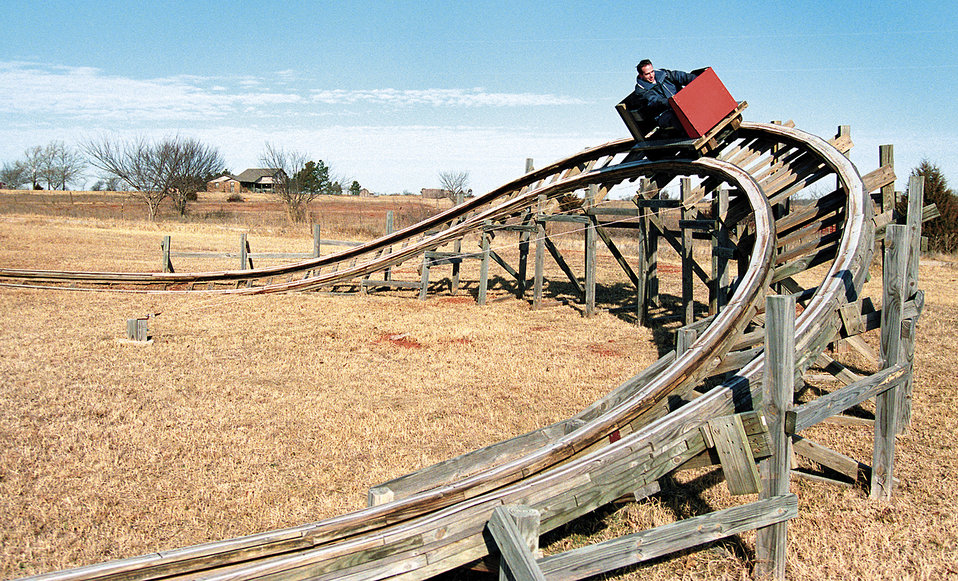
Engineer's career like roller coaster ride

TINKER AIR FORCE BASE, Okla. -- Engineer Jeremy Reid has enjoyed hundreds of rides on the roller coaster he built on his parents' property during his college days. The first stomach-wrenching drop dives 20 feet to propel the car to 20 mph. Reid works in the contractor logistics support directorate at Tinker Air Force Base, Okla.